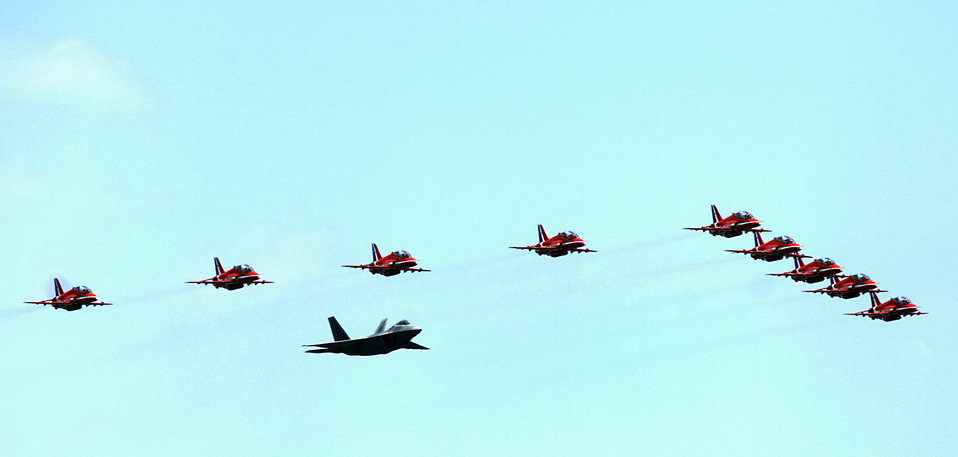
Raptor joins Red Arrows

Maj. Paul Moga flies in formation in an F-22 Raptor with the Royal Air Force Aerobatic Team, The Red Arrows, during an afternoon practice flight June 18 at Langley Air Force Base, Va. The aircraft will perform at AirPower over Hampton Roads, the Langley AFB airshow, which is scheduled for June 20 to 22. Major Moga is an F-22 Demonstration Team pilot.